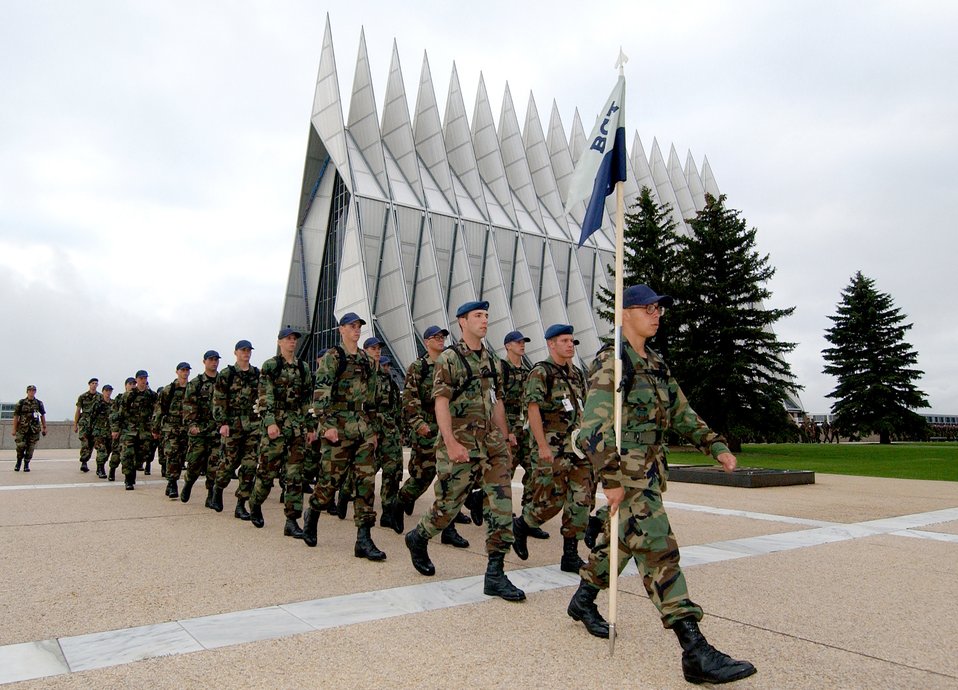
Trainees march out for field portion of basic cadet training

U.S. AIR FORCE ACADEMY, Colo. -- Nearly 1,300 people from the Class of 2008 begin a 7.8 mile march from the Terrazzo here to a tent city in Jacks Valley on July 23 to begin the field portion of basic cadet training.